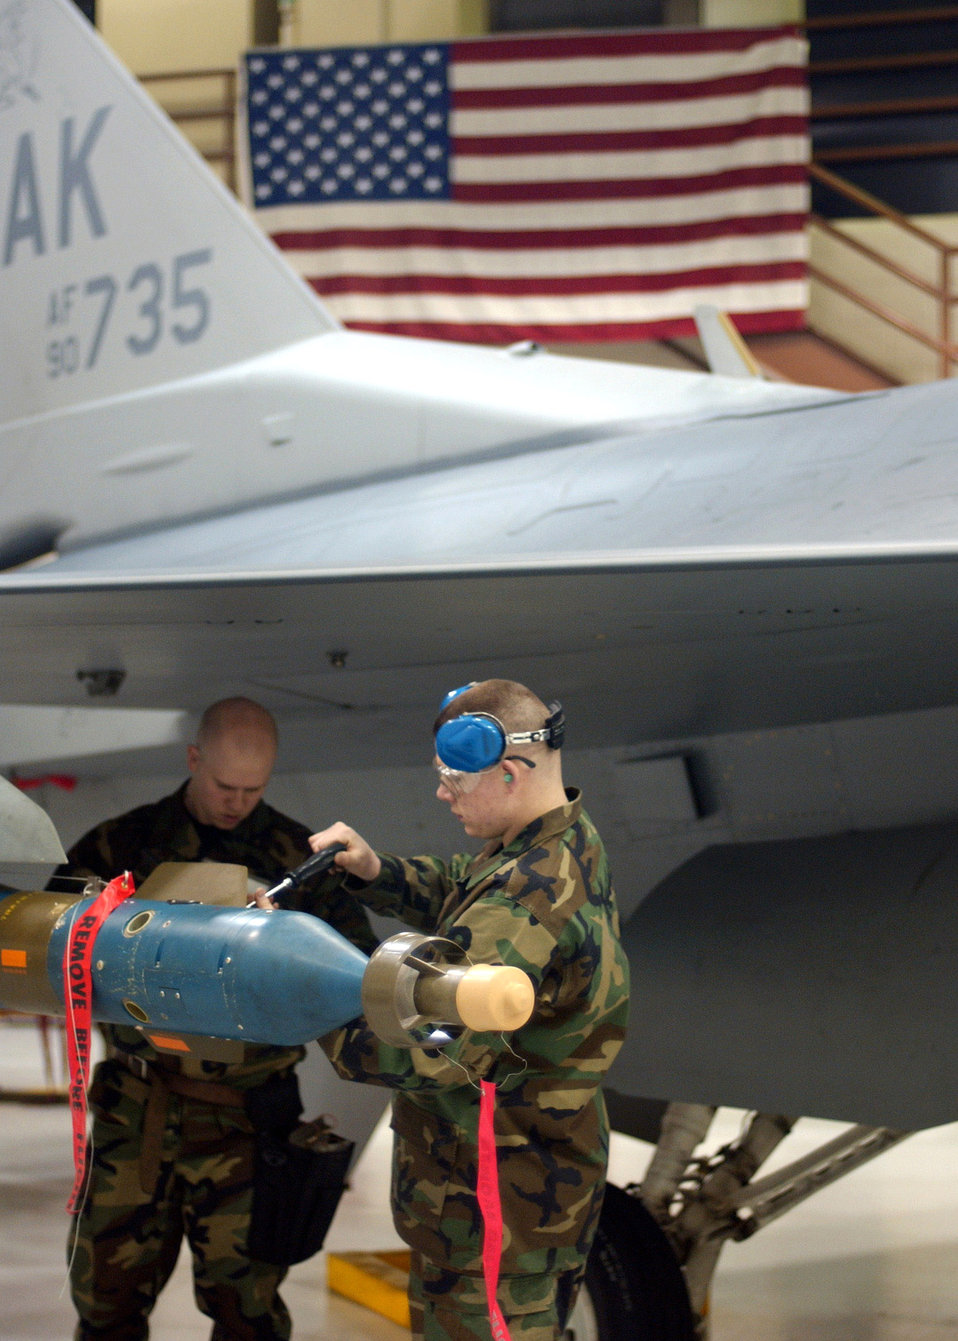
Competing for load crew honors

Staff Sgt. Aaron Slay and Senior Airman Michael Lee tighten down bolts to an air-to-ground missile on an F-16 Fighting Falcon for the Weapons Standardization Load Crew of the Year Competition Jan. 11 at Eielson Air Force Base, Alaska. The competition evaluates technical proficiency, safety procedures and overall time. Both are assigned to the 18th Aircraft Maintenance Unit. The 18th AMU's overall time was 56 minutes and 37 seconds.